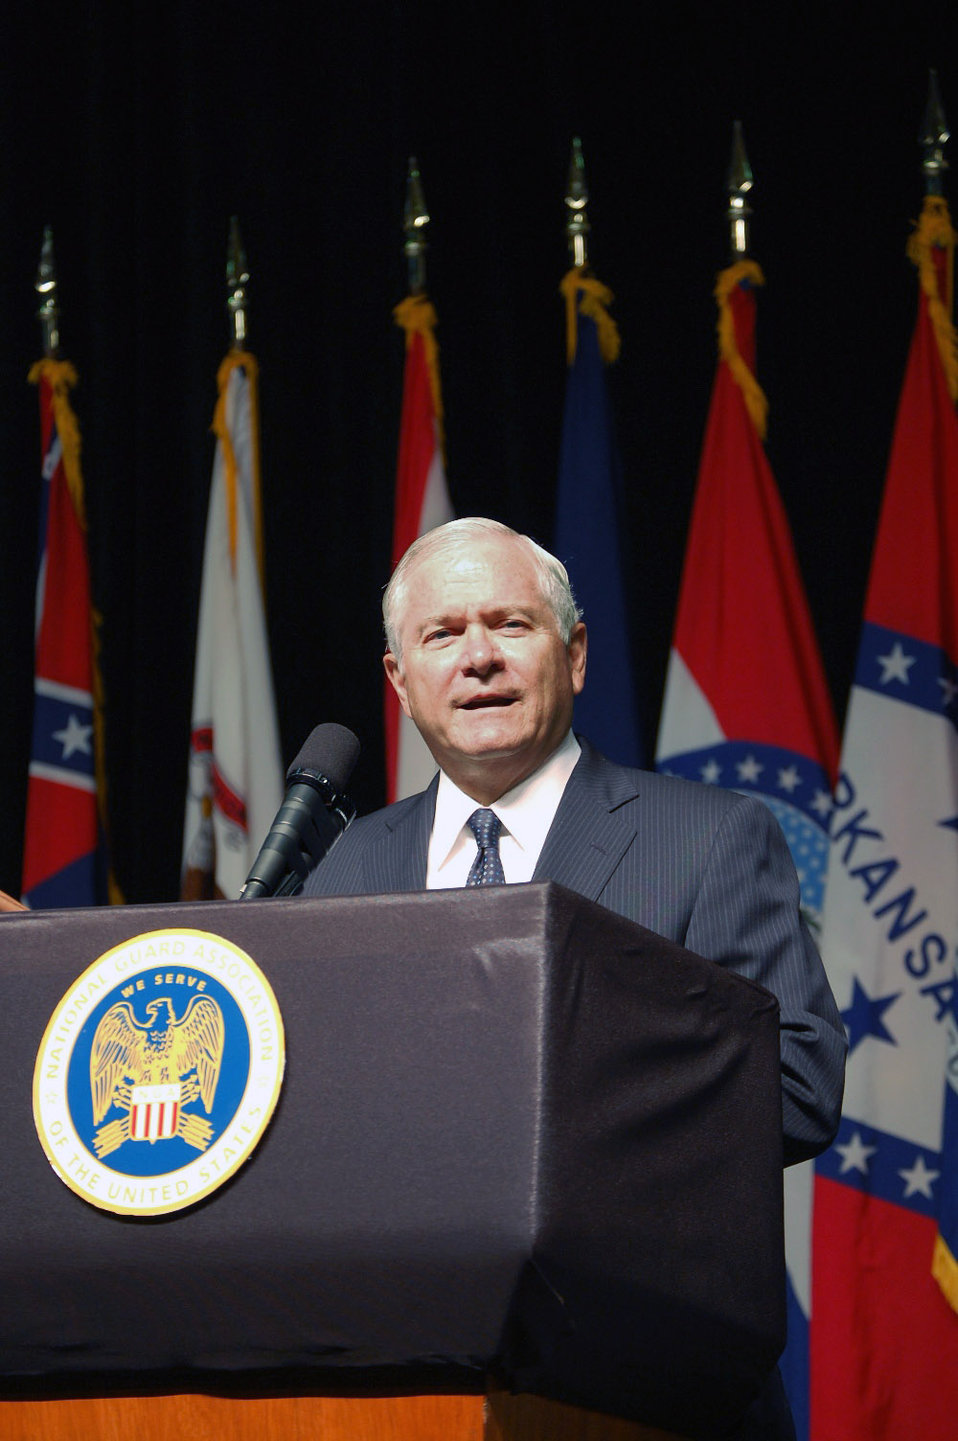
Military leaders discuss National Guard role

Secretary of Defense Robert M. Gates speaks during a conference of the National Guard Association of the United States Sept. 22 in Baltimore.